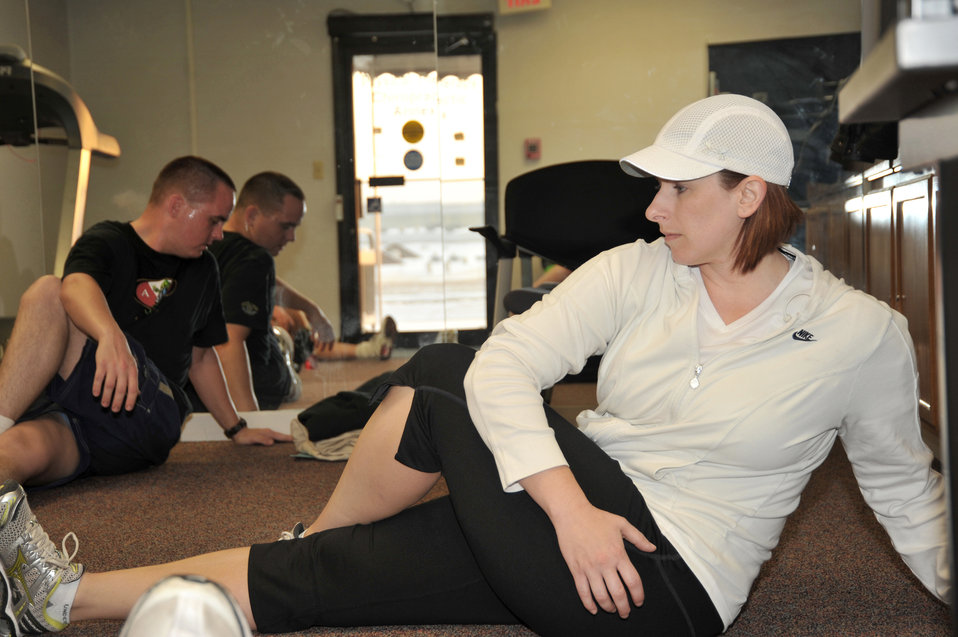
Get Fit Run

Marcy Jameson leads participants in the Get Fit Run class at Offutt Air Force Base, Neb., in some post-running stretching. Ms. Jameson is an exercise physiologist and the health and wellness center flight chief at Offutt AFB.